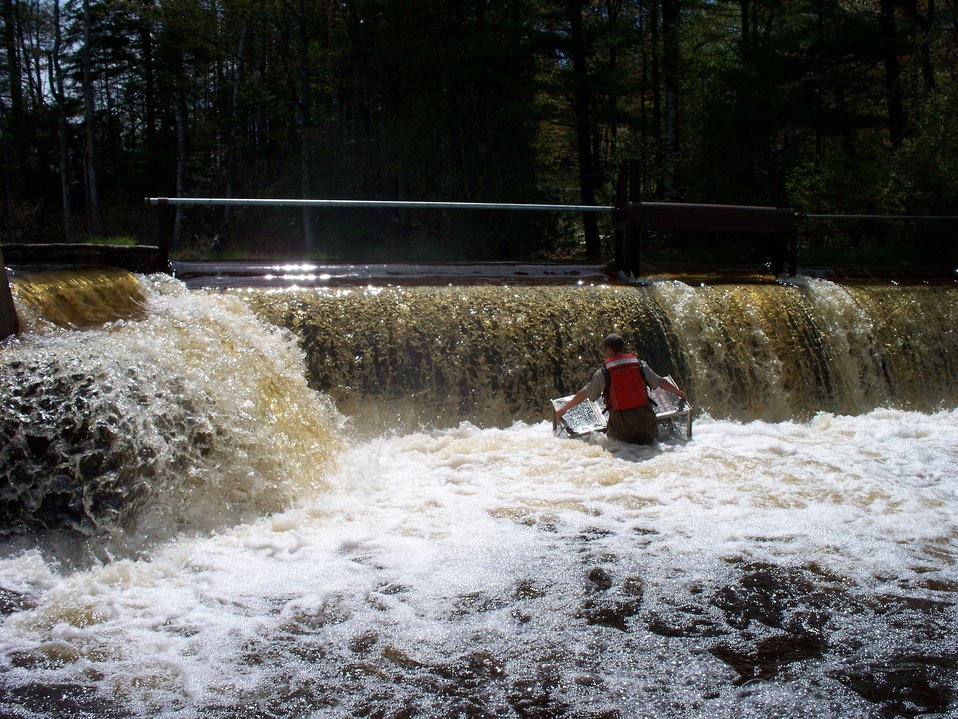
Deploying a Portable Assessment Trap at the Rock River, Wisconsin.